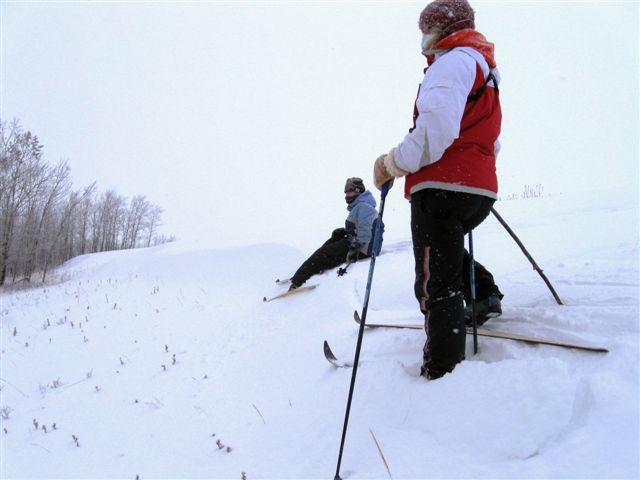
Volunteers on Skis

Two volunteers use skis to conduct the first annual Christmas Bird Count at Lostwood National Wildlife Refuge in North Dakota.